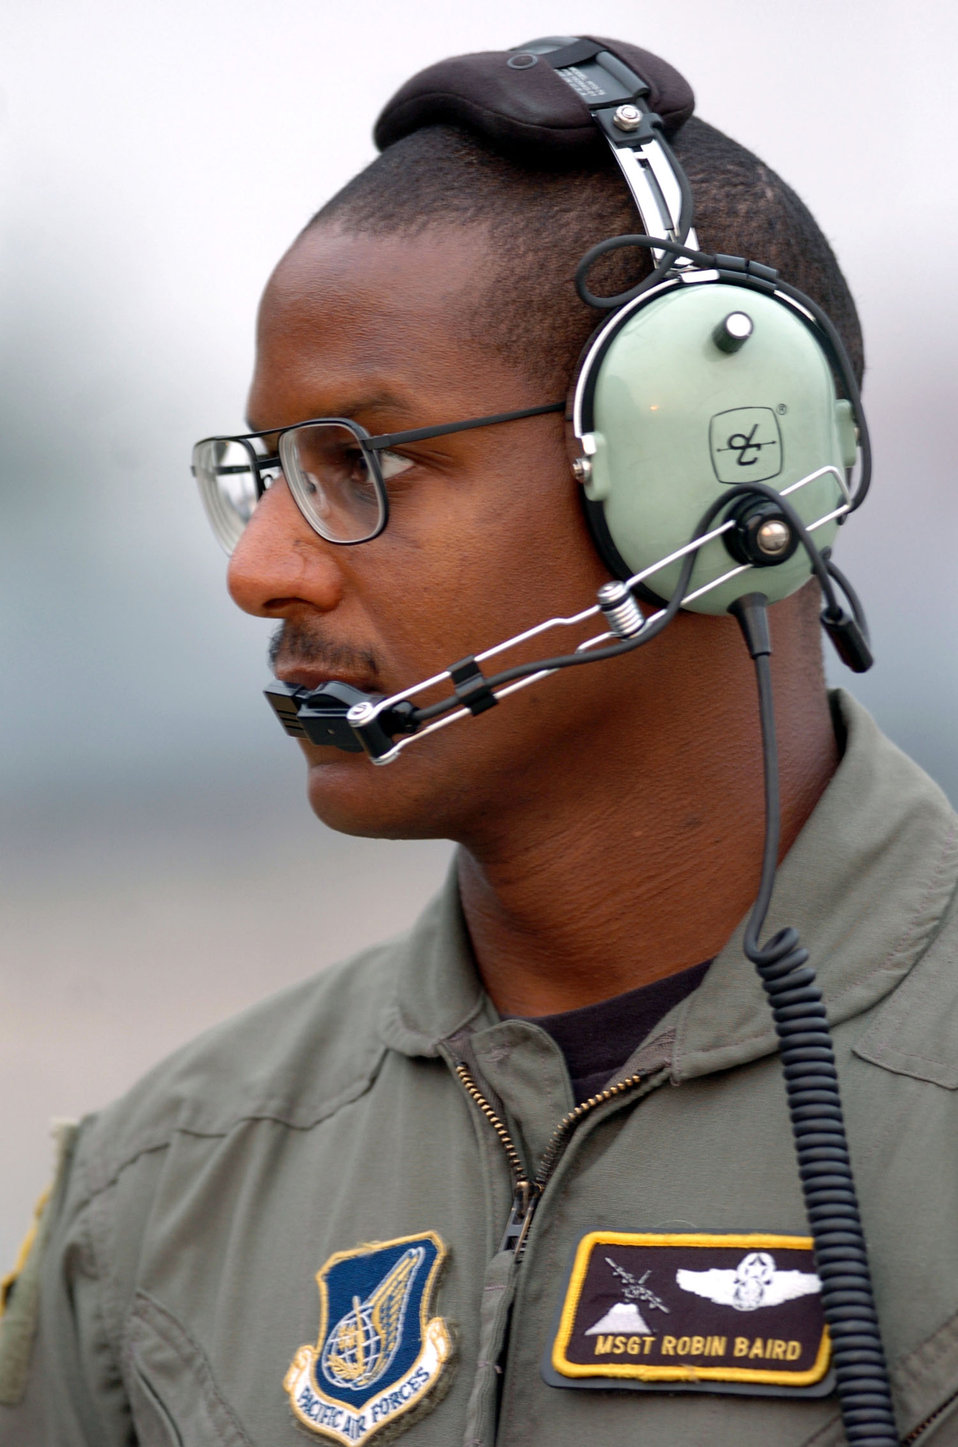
Airmen brandishing a 'Keen Sword'

YOKOTA AIR BASE, Japan -- Master Sgt. Robin Baird checks his C-130 Hercules before a cargo airdrop mission during exercise Keen Sword 2005 here Nov 11. Sergeant Baird is a loadmaster from the base's 36th Airlift Squadron. Some of the exercise events and objectives include dissimilar aircraft training, noncombatant evacuation operations, base security and force protection, search and rescue, and close-air support. The exercise is being conducted at U.S. and Japanese military bases throughout Japan.